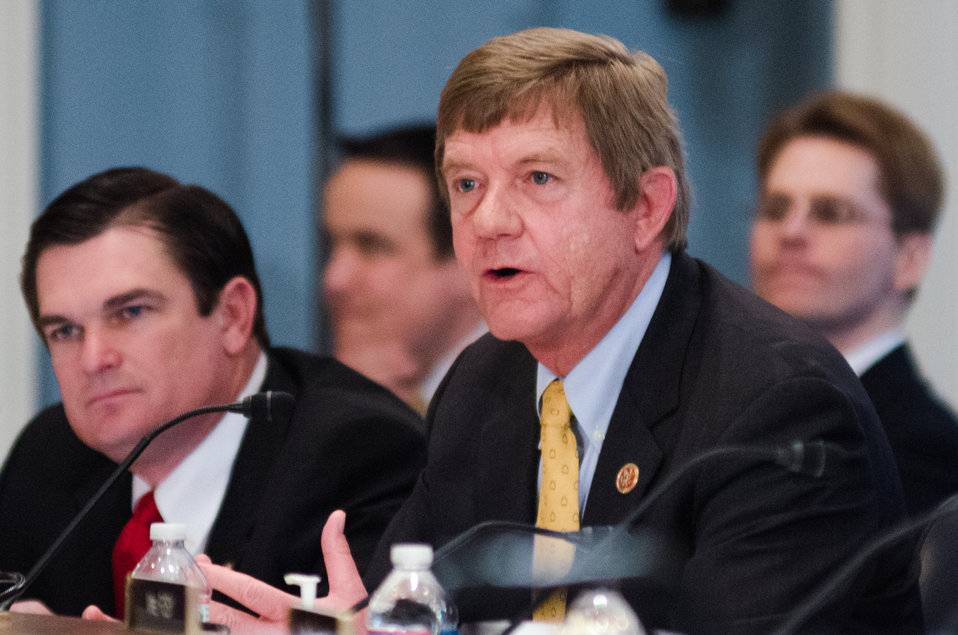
Representative Scott Tipton (CO) questions Agriculture Secretary Tom Vilsack, during his testimony before the House Agriculture Committee regarding the “State of the Rural Economy“ at the Longworth House Office Building in Washington, D.C. on Tuesday, Mar. 5, 2013.